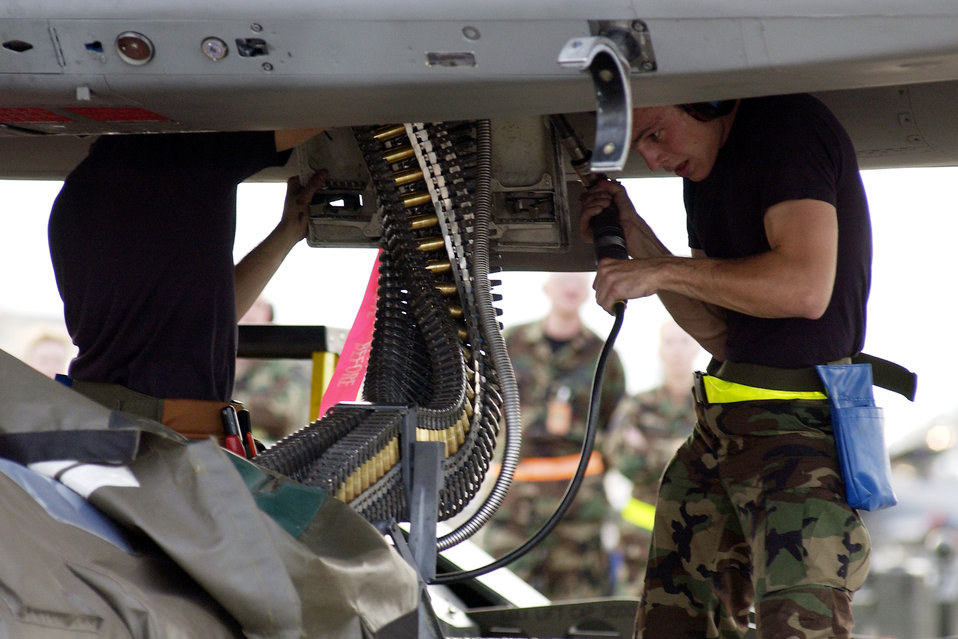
William Tell 2004

TYNDALL AIR FORCE BASE, Fla. -- Senior Airman Josh Pousson and Senior Airman Stephen Staudinger load live ammunition into an F-15 Eagle during William Tell 2004 here recently. William Tell, which tests an aircrew's ability to perform under combat conditions, is a two-week competition challenging pilots, weapons loaders and maintainers from five F-15 fighter wings. Both Airmen are assigned to the Oregon Air National Guard.